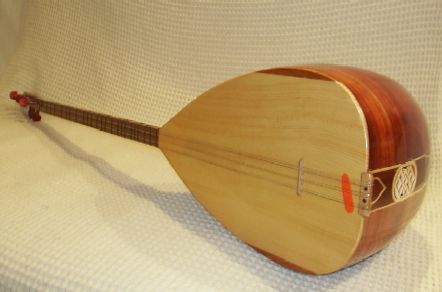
Baglama turc manche long